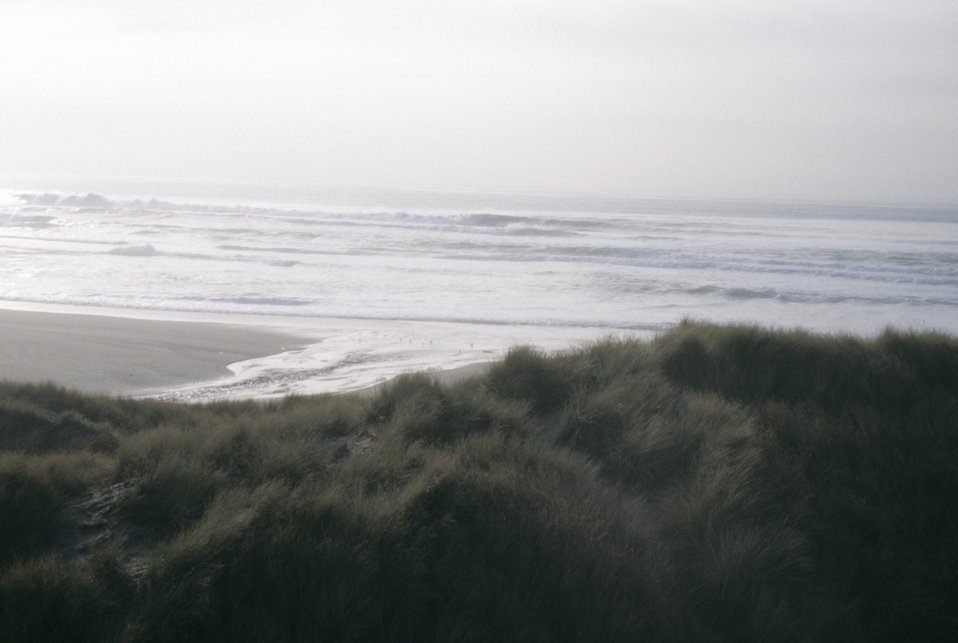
Point Reyes Great Beach